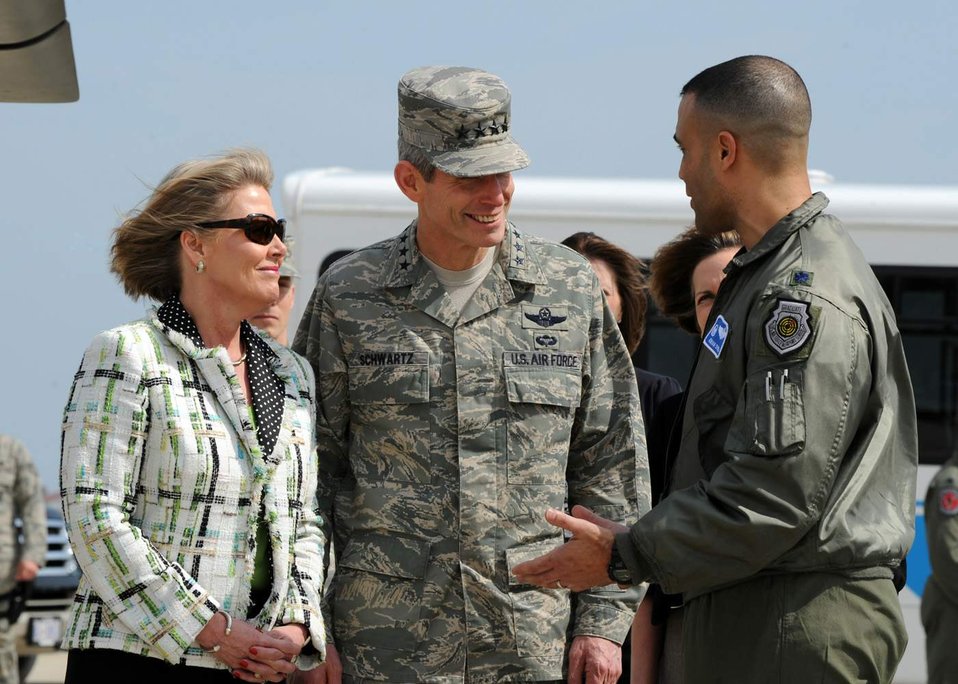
Gen. Schwartz to Airmen: 'We are a family'

General Norton Schwartz and his wife, Suzie Schwartz, are briefed by Lt. Col. Adrian Spain on the capabilities of the F-22 Raptor March 11 at Langley Air Force Base, Va. General Schwartz, the Air Force chief of staff, reviewed Langley AFB's warfighting capabilities, viewed an F-22 demonstration, and held a town hall meeting with Airmen. Mrs. Schwartz visited the Airmen and Family Readiness Center. Colonel Spain is the 94th Fighter Squadron commander.